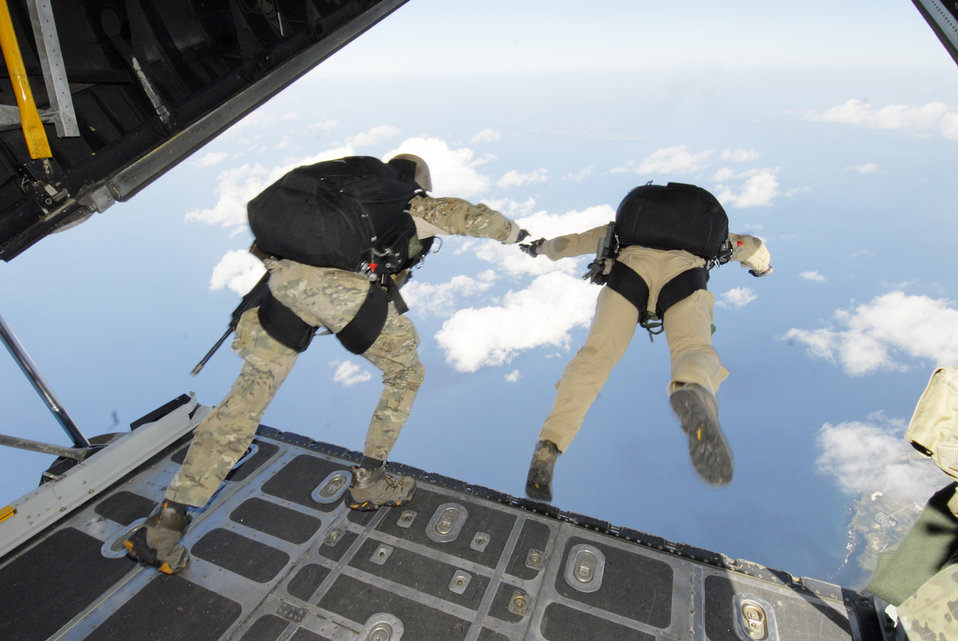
Kadena Airmen jump over le Shima Island

Lt. Col. Stephen Goodman (left) and Capt. Robert Wilson perform a high-altitude low-opening jump over Ie Shima Island, Japan Dec. 23, 2009. The jump was part of routine training for the 31st Rescue Squadron and the 320th Special Tactics Squadron. The Airmen are assigned to the 31st RQS at Kadena Air Base, Japan.